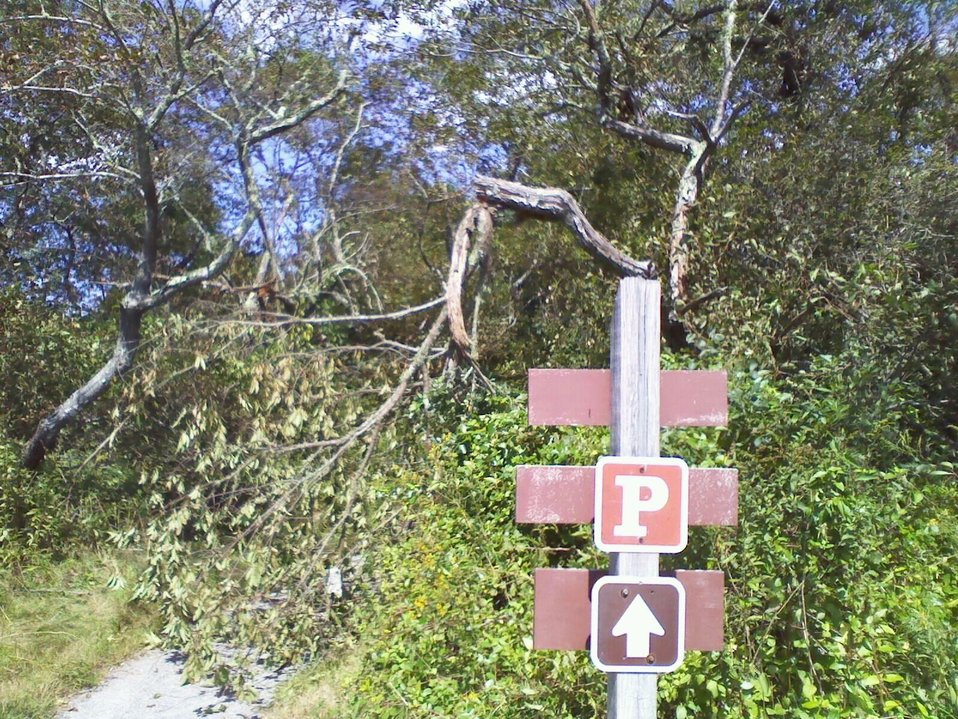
Fallen Branches on Hiking Trail

Post Hurricane Irene damage at Trustom Pond National Wildlife Refuge, South Kingstown, RI.